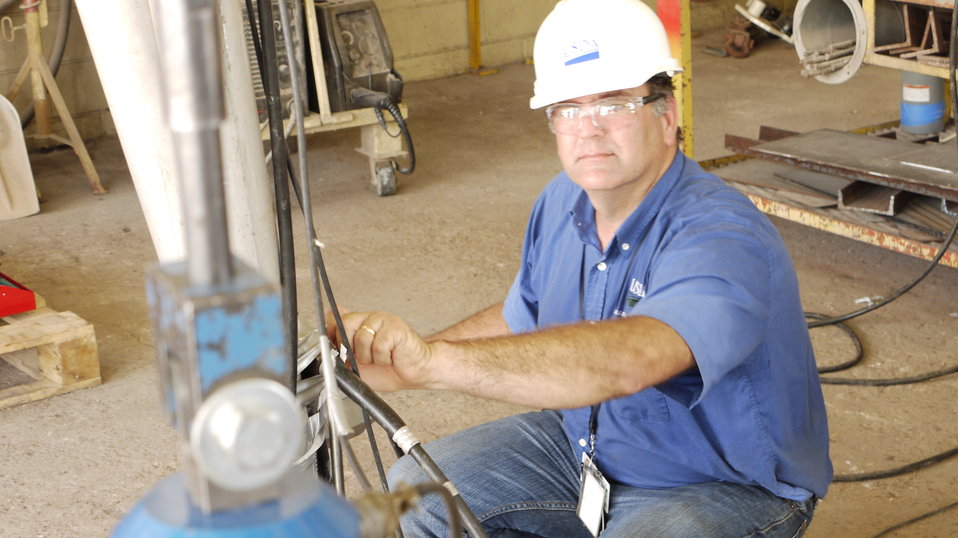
U.S. Department of Agriculture’s (USDA) Grain Inspection, Packers, and Stockyard Administration (GIPSA) industrial specialist Troy Kramer raises the USDA GIPSA test weight standards to obtain a weight reading that will be used to compare against the elevator owned test weight reading in order to calibrate the elevator weight at the grain elevator in Myrtle Grove, LA on Aug. 6, 2013. USDA GIPSA provides official testing of Automatic Bulk Weighing (Hopper) scales used in official certification of grain weight.